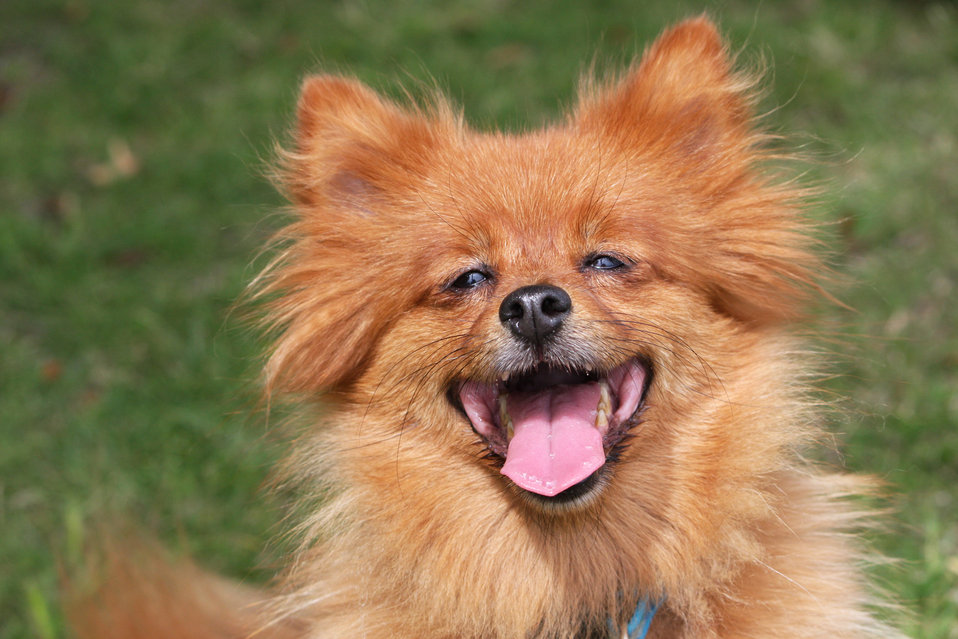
Happy dog

Happy, laughing ginger spitz dog.